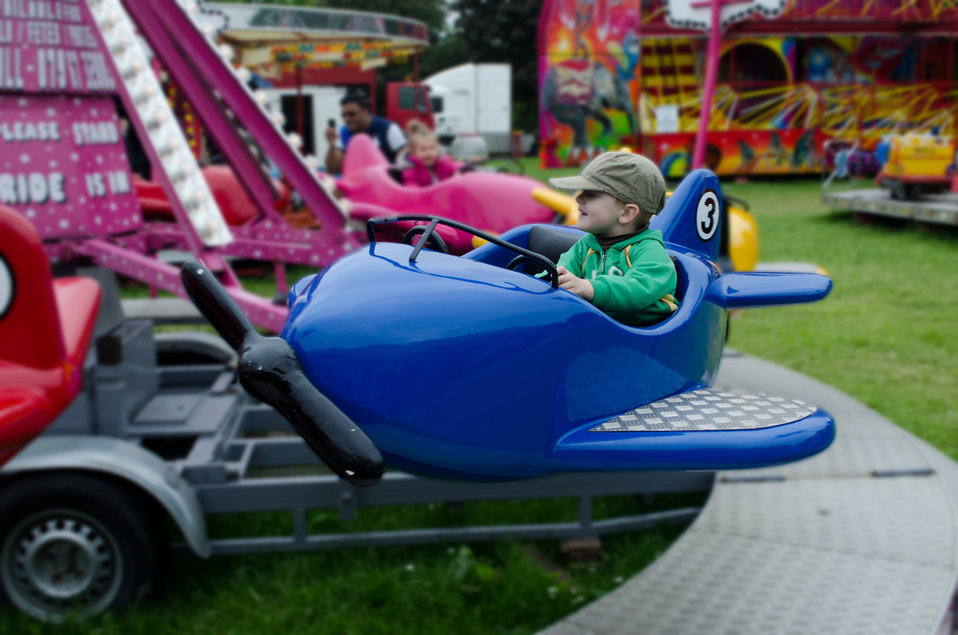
Child and the aircraft.